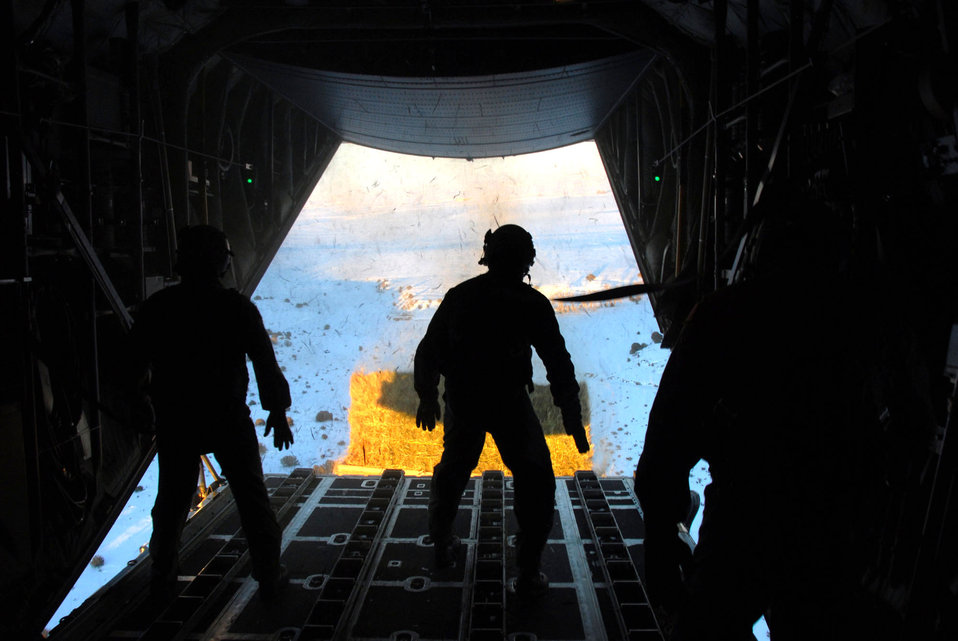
Emergency feeding mission

Loadmasters of the Wyoming Air National Guard watch a one-ton hay bale leave their C-130 Hercules aircraft on its way to feed a herd of cattle stranded by a snowstorm in southeastern Colorado Jan. 3.